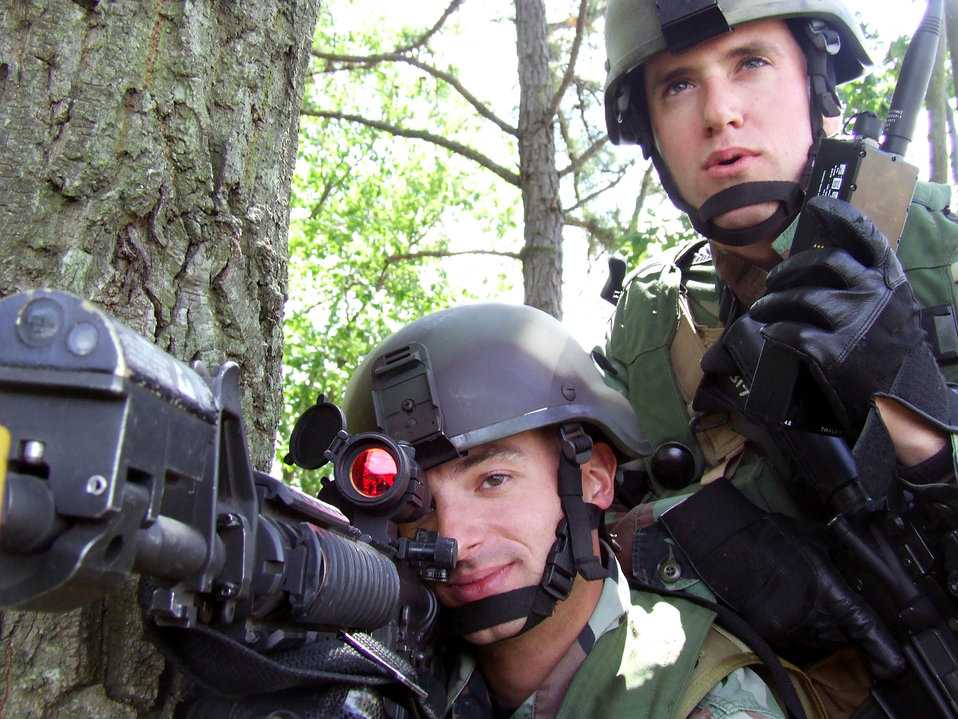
Eagle Flag takes flight

Airman 1st Class Travis Fillman and Senior Airman Kelly Gallmann watch over a security checkpoint for the contingency response group at Naval Air Engineering Station Lakehurst, N.J., June 23. Both Airmen are with the 817th Contingency Response Group at McGuire Air Force Base, N.J. They participated in Exercise Eagle Flag 07-5, operated by the U.S. Air Force Expeditionary Center at Fort Dix, N.J.